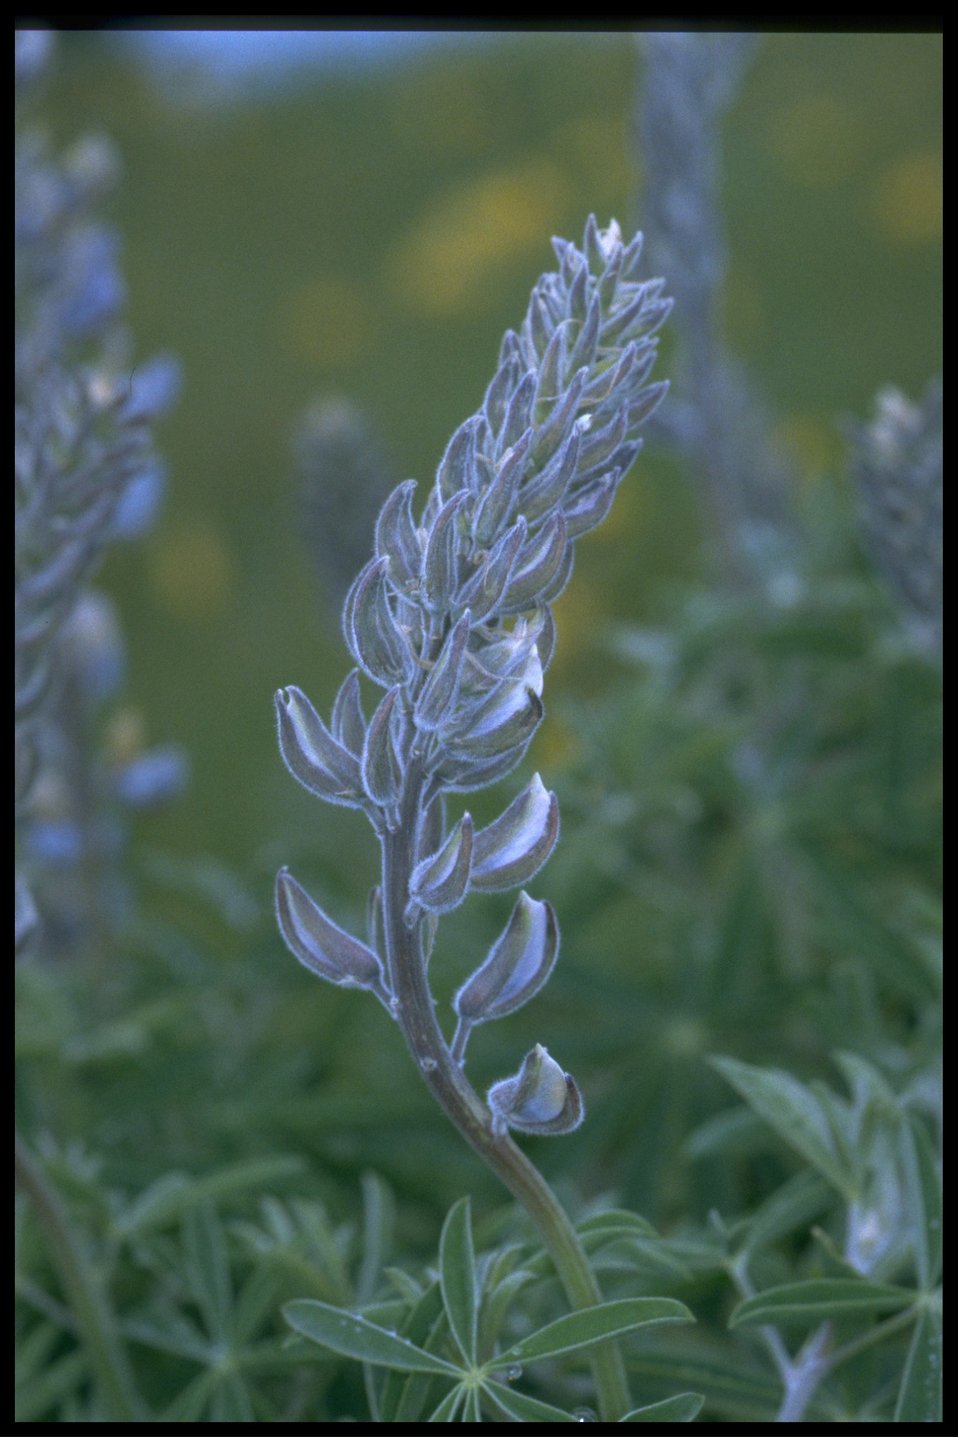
Medium shot of lupine (genus Lupinus).